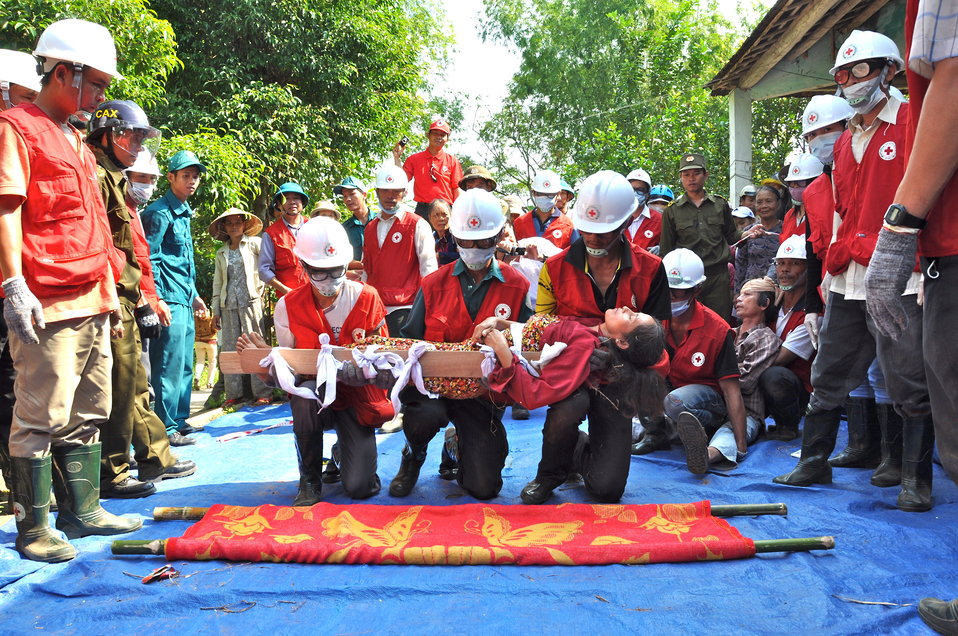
USAID, Red Cross Support Disaster Response Drill in Duy Hoa Commune, Quang Nam Province

Duy Hoa Commune, Quang Nam Province
December 5, 2012